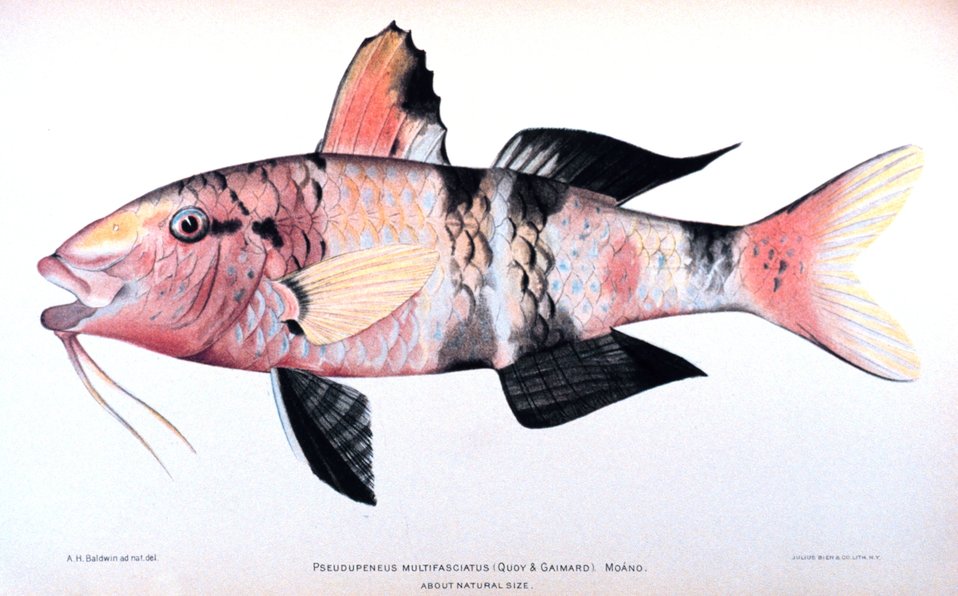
Pseudupeneus multifasciatus (Quoy & Gaimard). Moano. In: 'The Shore Fishes of the Hawaiian Islands, with a General Account of the Fish Fauna', by David Starr Jordan and Barton Warren Evermann. Bulletin of the United States Fish Commission, Vol. XXIII, for 1903. Part I. P. 574, Plate XXII.